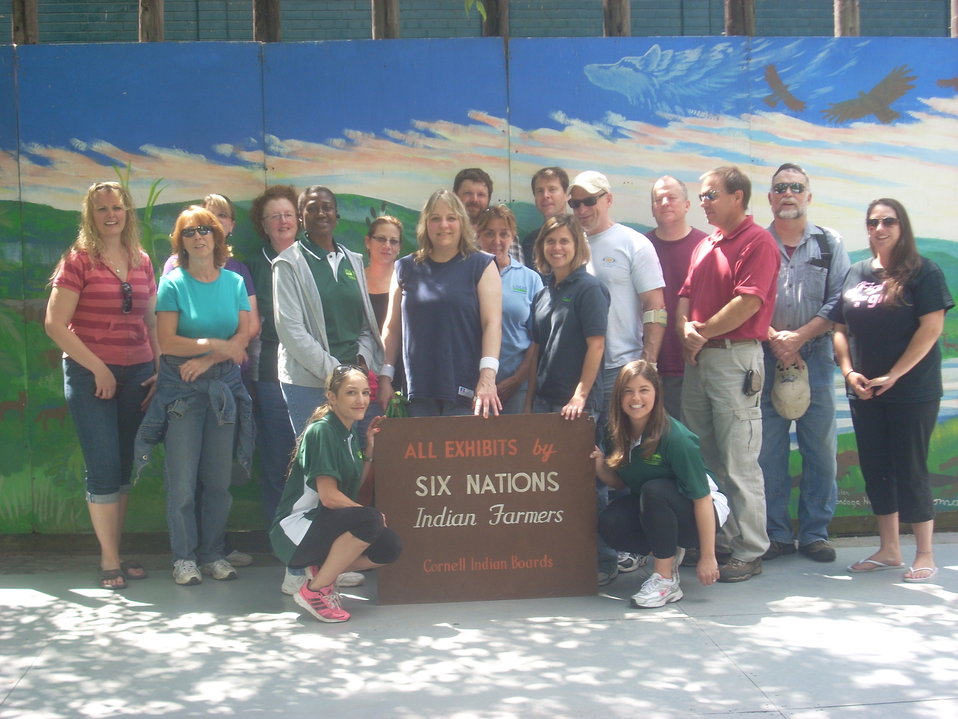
U.S. Department of Agriculture (USD) Rural Development (RD) and Farm Service Agency (FSA) Volunteers pause for a group photo at the conclusion of the 2013 USDA Cultural Transformation day at the Iroquois 6 Nation Indian Village at the New York State Fairgrounds. (back) Casey Chamberlain (RD – Loan Specialist), LeeAnn Rider (RD – Loan Specialist), Christina Cerio (RD – Lead Loan Specialist), Karen McDonnell (RD – Loan Specialist), Ora Giles (RD – Equal Opportunity Manager), Nancy Malagisi (FSA - Administration Technician), Sue Galster (RD – Area Technician), John Flocke (FSA - GIS Specialist), Nancy DeJohn (FSA - Support Services Technician), Mark Dennis (FSA - Executive Officer), Heather Grady (FSA - GIS Specialist), Lee Telega (RD – State Director), Jeff Archer (RD – Loan Specialist), Steven Davis (RD – Construction Inspector), Alex Dorman (RD - Appraiser), Erin Farley (RD – Program Technician).